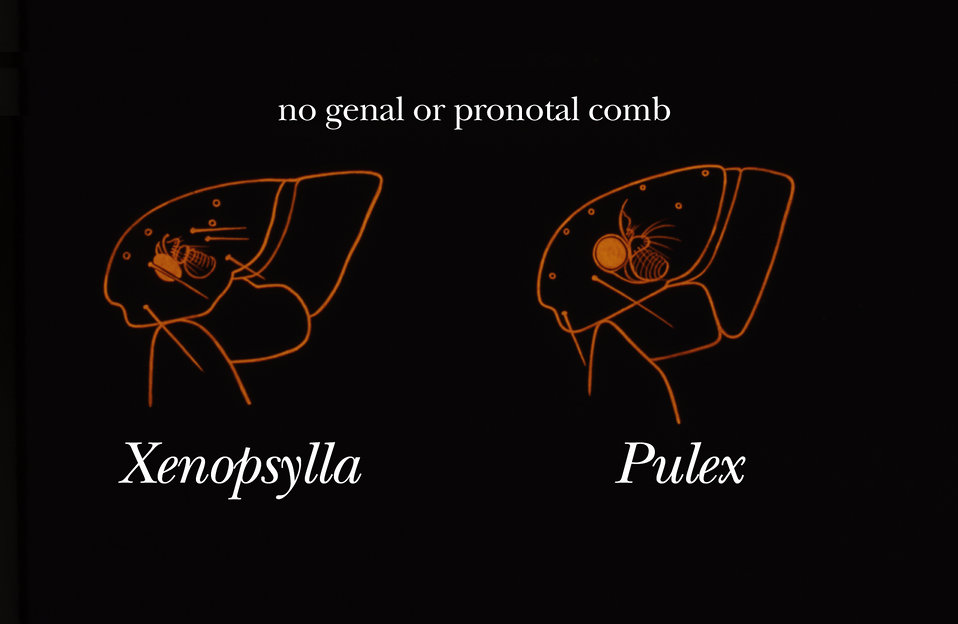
This diagram compares the head region morphologic characteristics of fleas in the genera Xenopsylla, and Pulex.